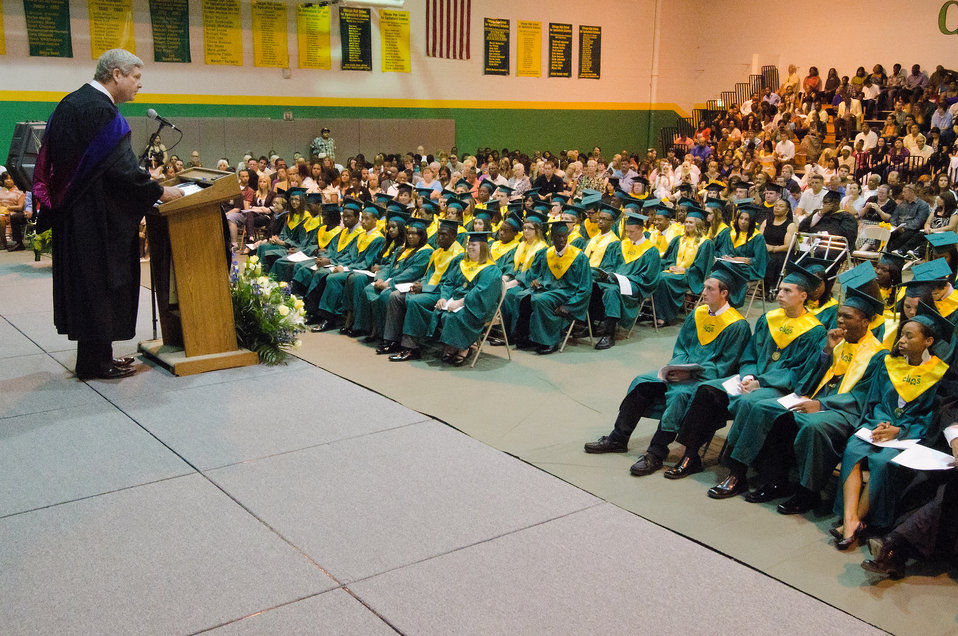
Agriculture Secretary Tom Vilsack delivers the 2012 commencement address at the Chicago High School for Agricultural Sciences in Chicago, Illinois on Friday, June 8, 2012. Secretary Vilsack discussed innovation in the food and agricultural industries and the importance of the American agriculture sector in expanding economic opportunity and creating jobs in communities throughout the country.